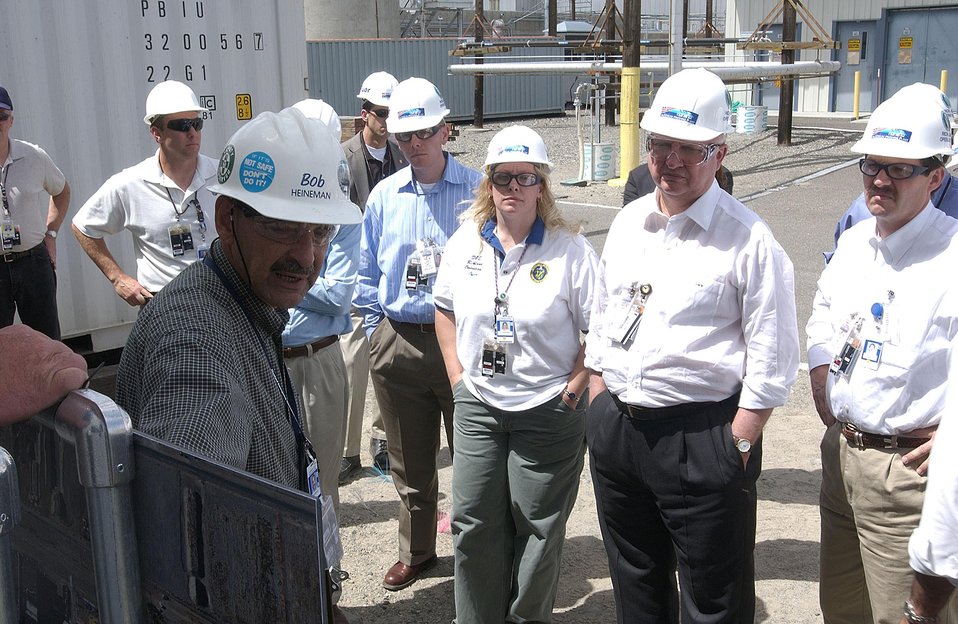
Bob Heineman, Director, Plutonium Finishing Plant Closure Project Office, provides orientation for Energy Secretary Samuel Bodman.

During his visit to the PFP on June 2, 2005, Secretary Bodman watched the clean out works in the tanks under the 241-Z Waste Treatment Facility as well as decontaminating and decommissioning PFP and storing plutonium.